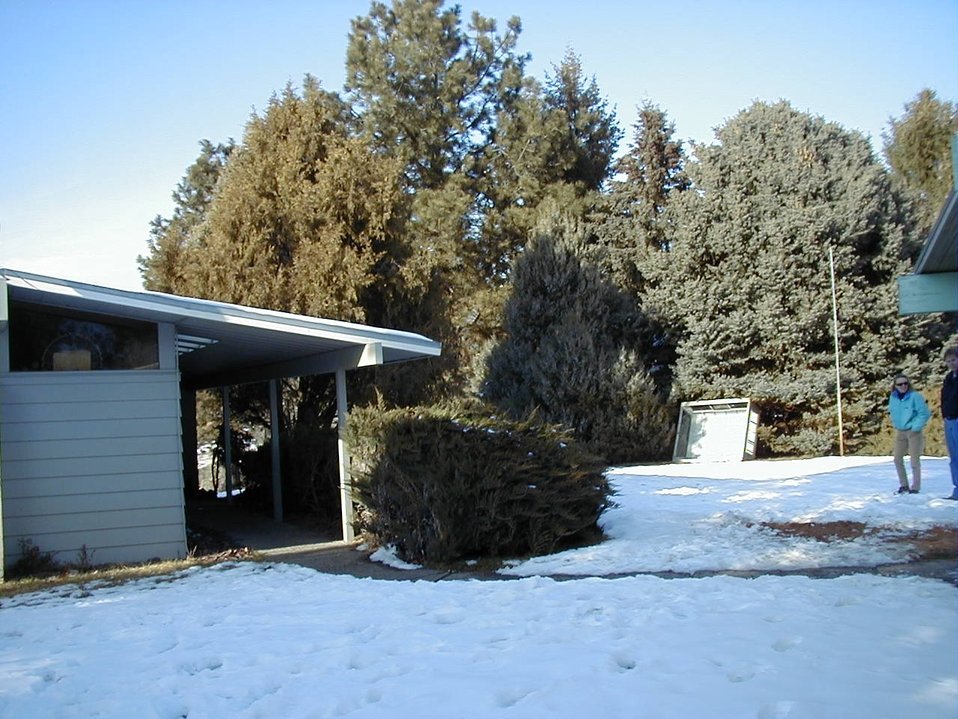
Environmental Education McCord house Boise Front Foothills Fire Safety and Urban interface Four Rivers Field Office LSRD Lower Snake River District